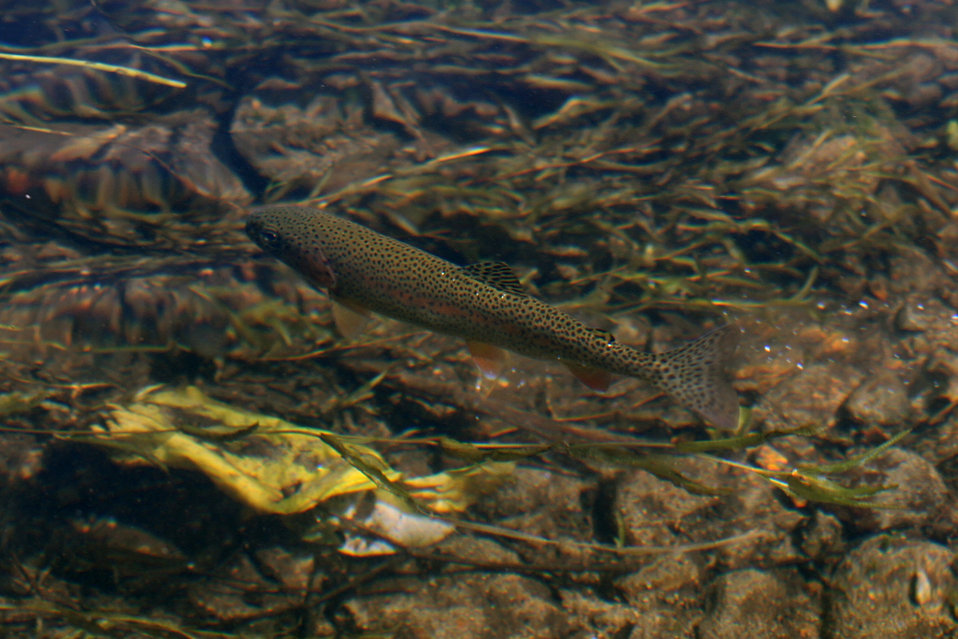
Rainbow trout, Fish Creek Alaska

USFWS/Katrina Mueller